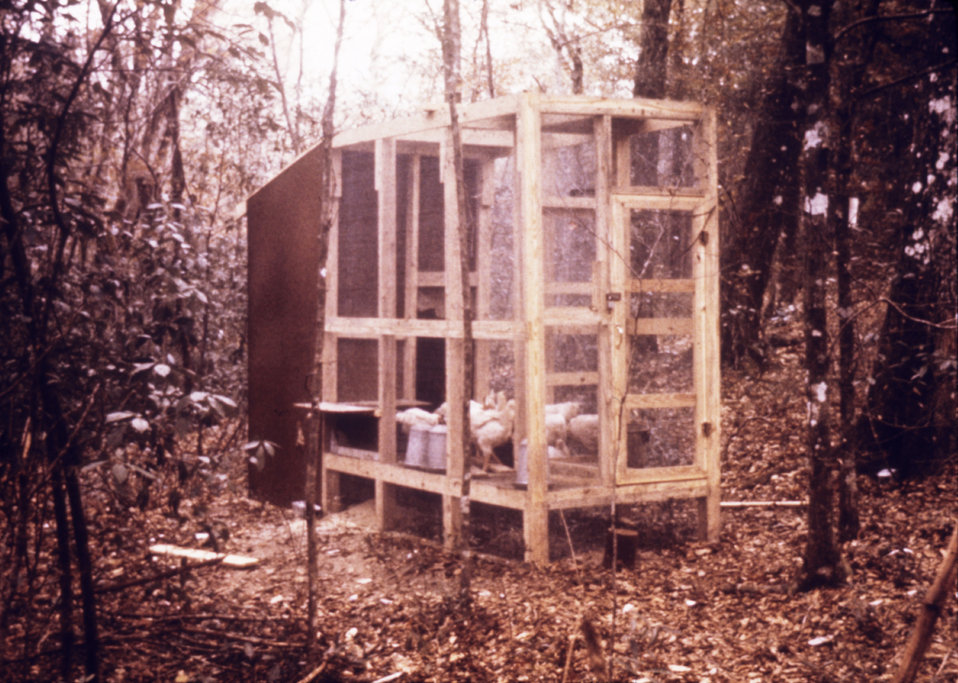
This photograph shows a caged sentinel chicken flock used to detect the presence of a specific arbovirus.